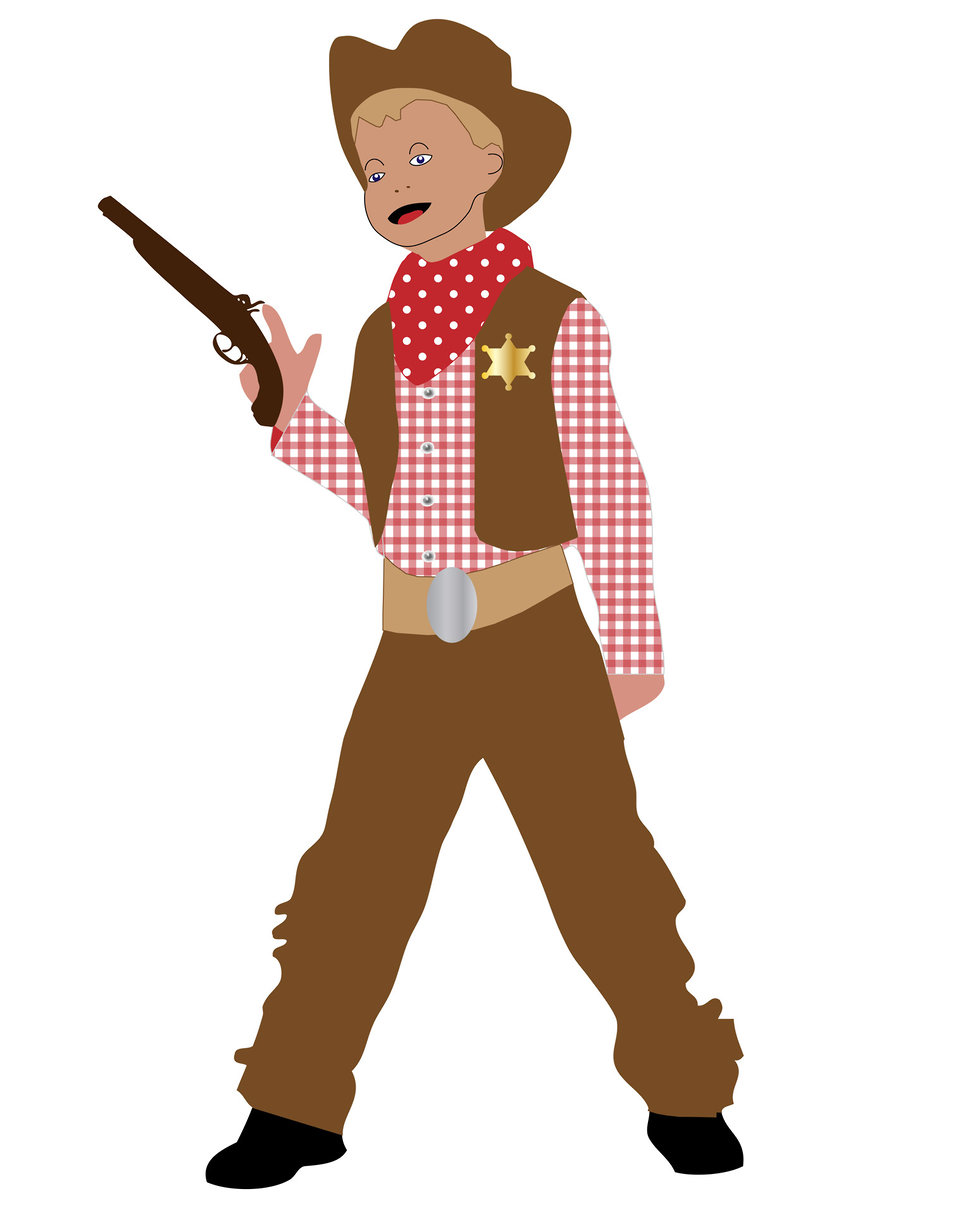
Cowboy kid clip-art

Cute little boy dressed as a cowboy clip-art for scrapbooking.